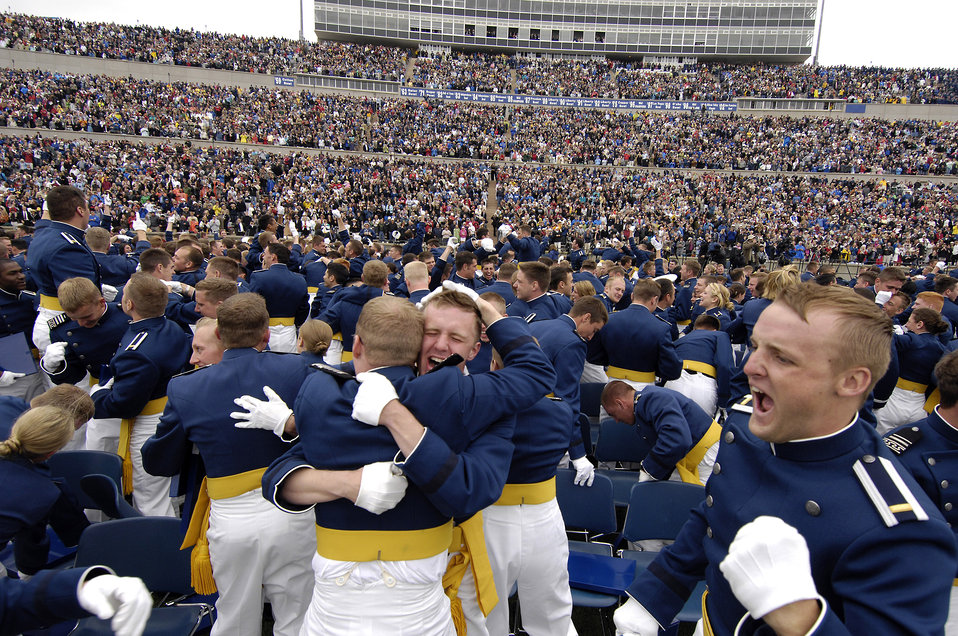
Academy Class of 2008 graduates

Newly-graduated second lieutenants celebrate after the traditional hat toss and Air Force Thunderbird flyover during the U.S. Air Force Academy Class of 2008 Graduation Ceremony at Falcon Stadium May 28. The Class of 2008, the 50th Academy class, comprised 1,012 cadets who will enter the Air Force as second lieutenants.